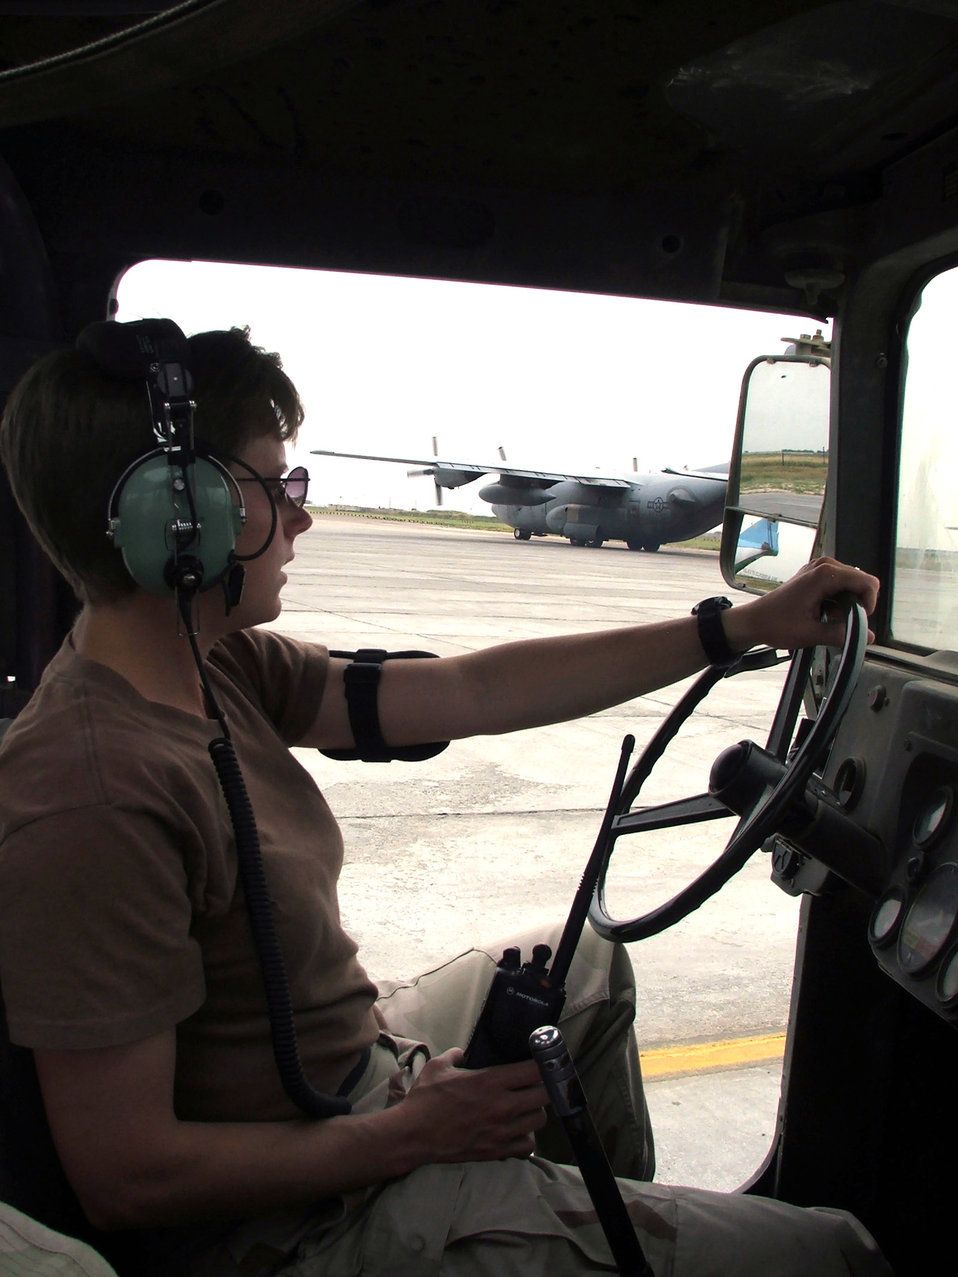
Transient alert Airmen handle diverse role

KARSHI-KHANABAD AIR BASE, Uzbekistan -- Tech. Sgt. Emily Green listens to her radio while watching a C-130 Hercules leave on an Operation Enduring Freedom mission from here May 2. She is the noncommissioned officer in charge of the 416th Air Expeditionary Group's transient alert flight and is deployed from McChord Air Force Base, Wash.